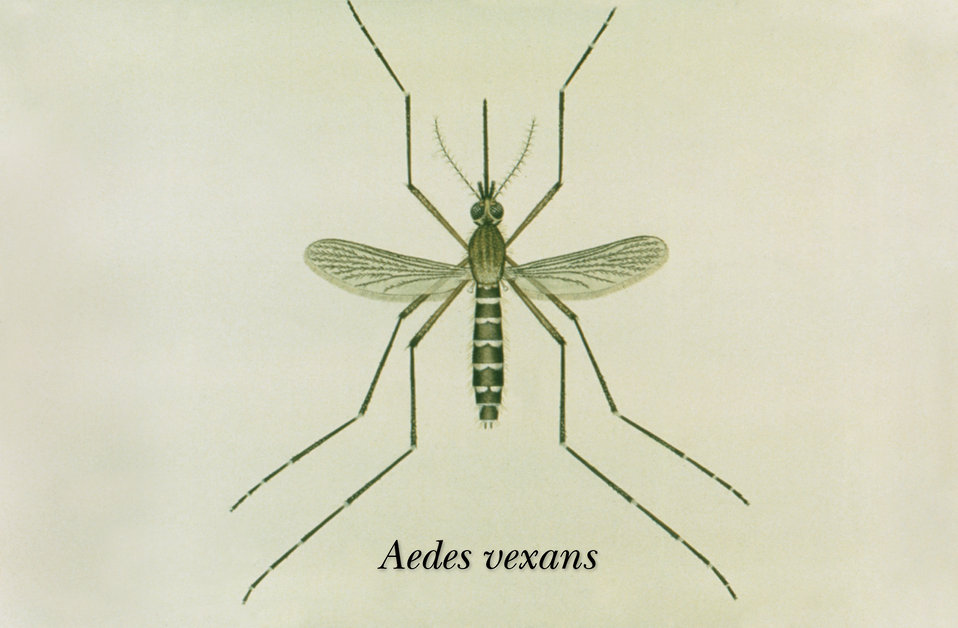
This is an illustration of an adult Aedes vexans mosquito.